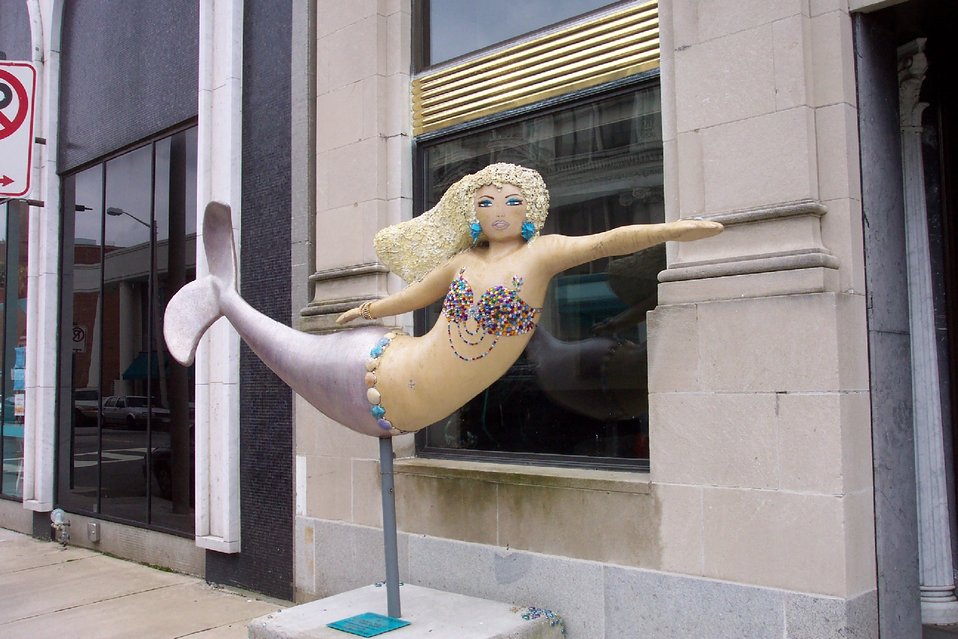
'The Jewel of Norfolk.' A Norfolk mermaid.